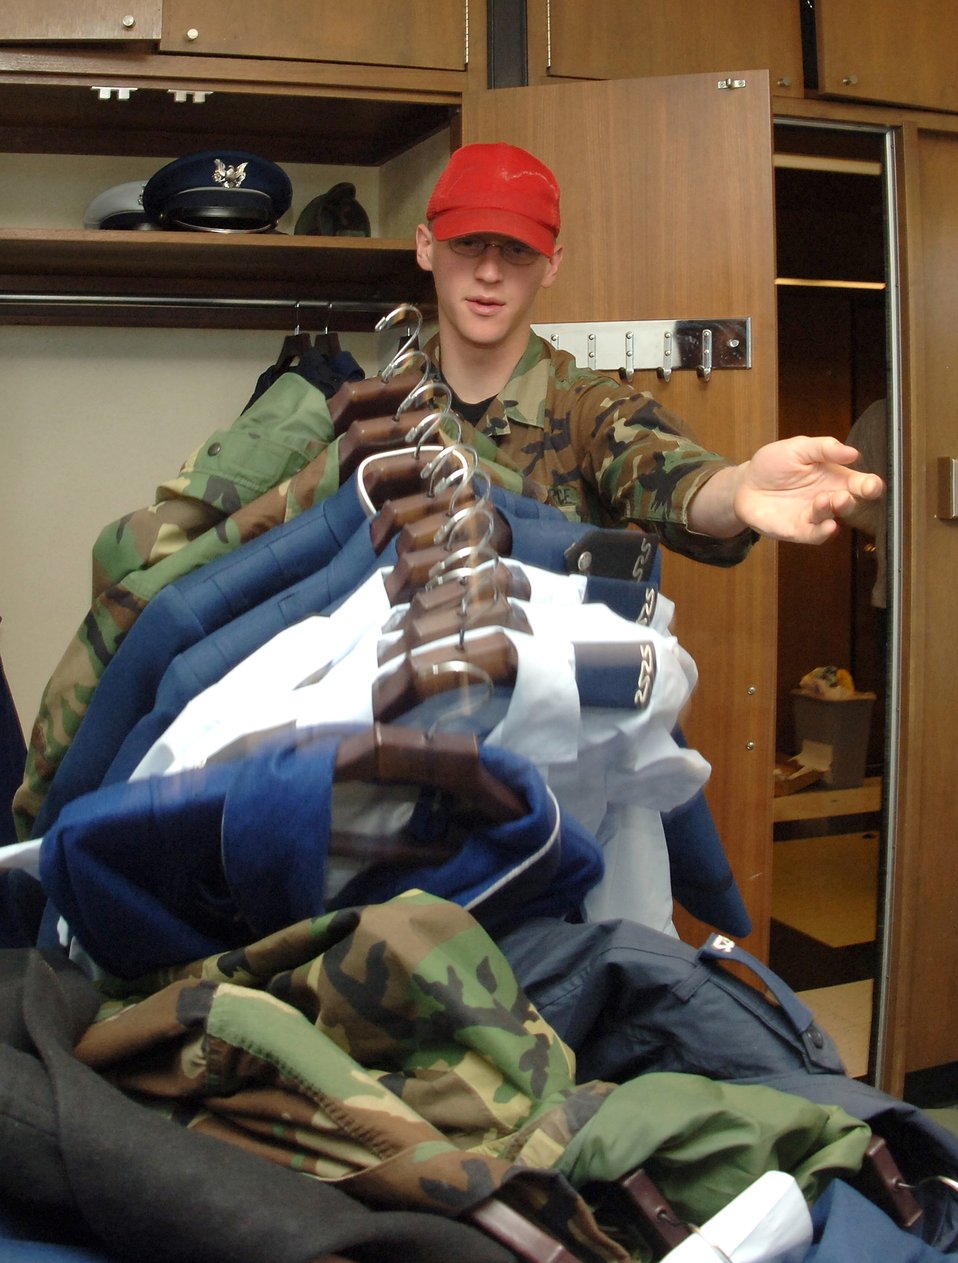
Class of 2009 formally recognized

Cadet 1st Class Andrew Havko dumps the contents of a fourthclassmen's closet Saturday, March 18, 2006, at the U.S. Air Force Academy, Colo. The inspection, where upperclassmen leave fourth class cadets rooms in disarray, is a tradition during recognition.